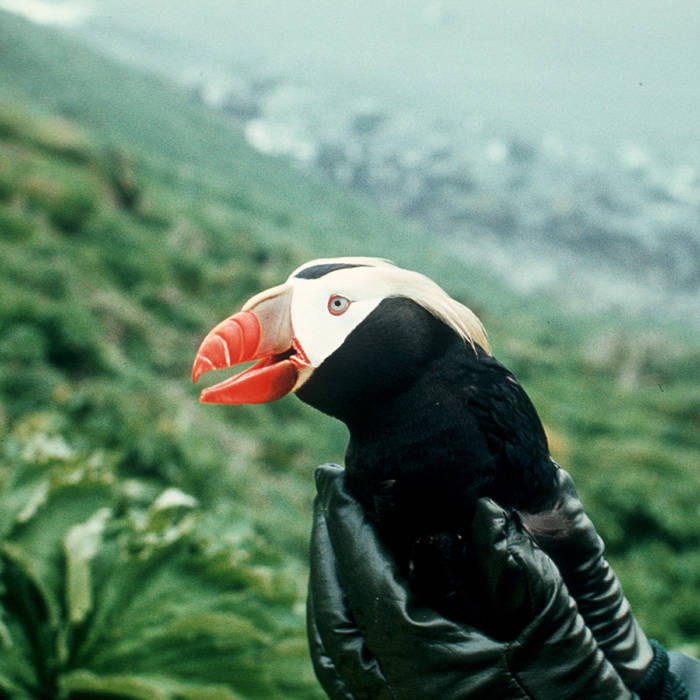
tufted puffin in hand

Alaska Maritime National Wildlife Refuge